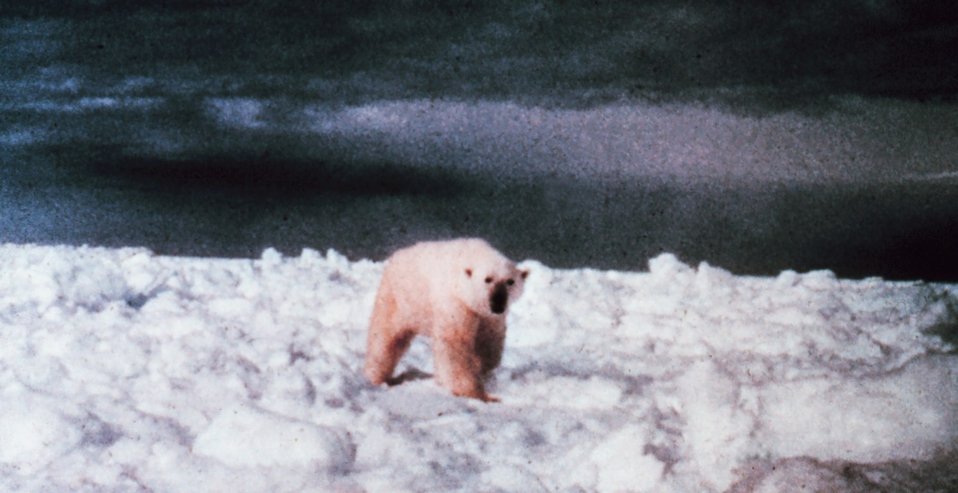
Polar bear - Ursus maritimus - on the ice in the Beaufort Sea.